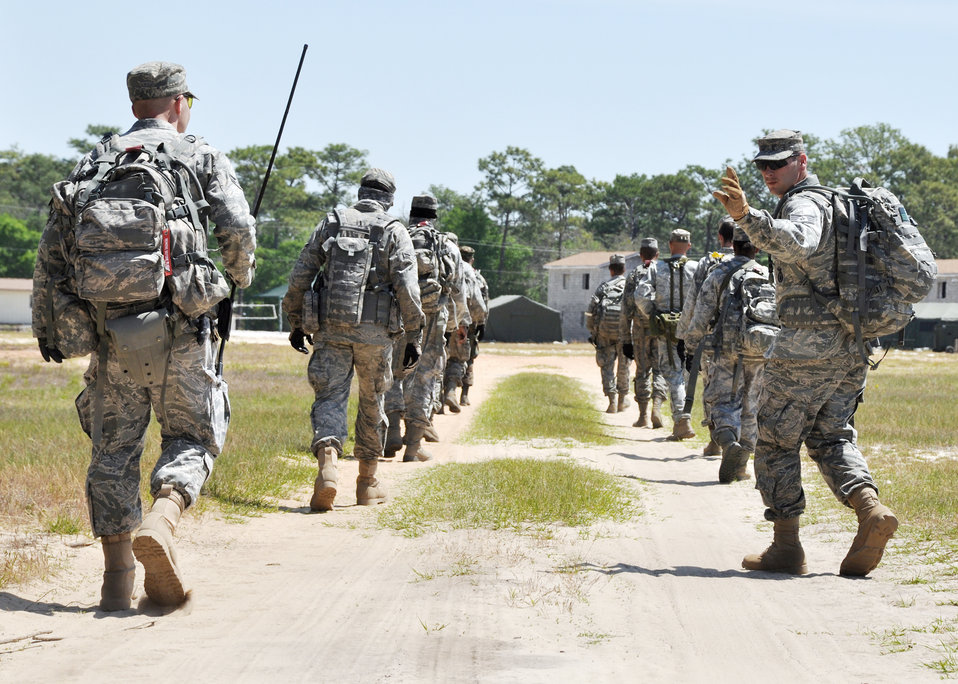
Brave Defender training

Staff Sgt. Daniel Craven instructs a member of his patrol to spread out while searching for improvised explosive devices April 22, 2010, at Eglin Air Force Base, Fla. Sergeant Craven is assigned to the 316th Security Forces Squadron at Joint Base Andrews, Md.